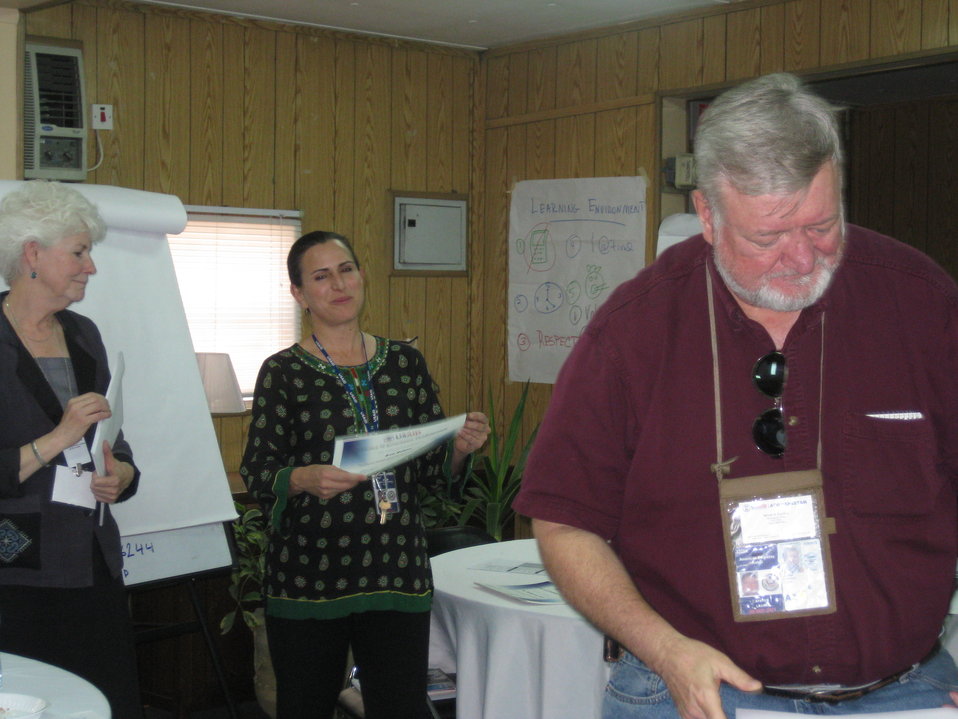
Afghan Youth Voices 059